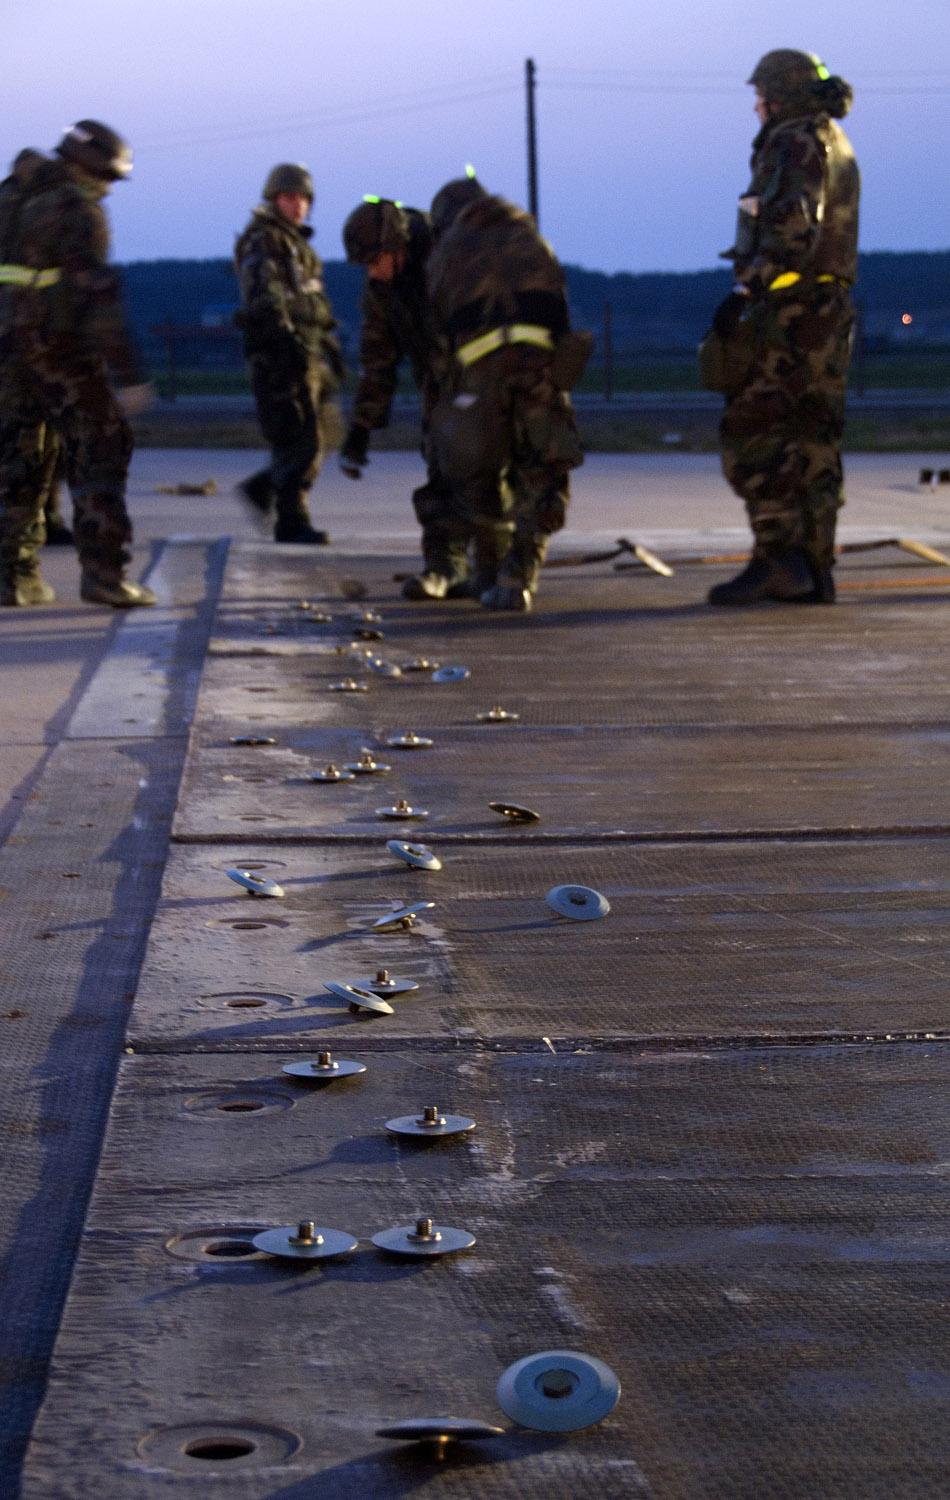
Crack 'em open

Airmen install bushings in fiberglass runway matting April 19 at Kunsan Air Base, South Korea. Airfield damage repair teams perform several functions including repairing damaged runways and restoring airfield lighting, making it possible to get aircraft back in the air quickly.